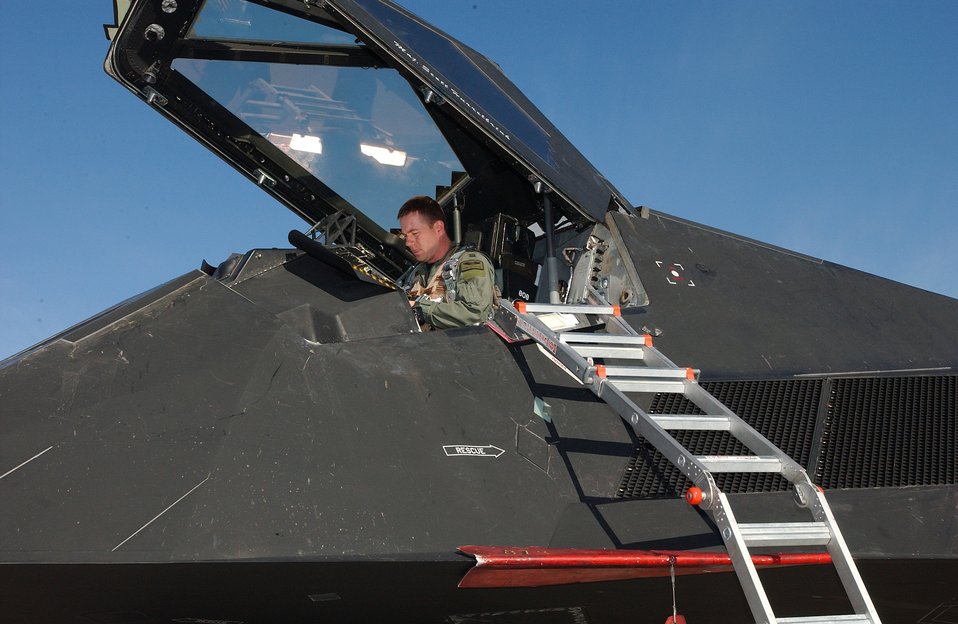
Nighthawk at Red Flag

NELLIS AIR FORCE BASE, Nev. (AFPN) -- Capt. Erik Jacobson reads a pre-flight checklists during Red Flag 06-1, here Jan. 21 to Feb. 18. Red Flag is an exercise that tests aircrews' warfighting skills. Flights involve more than 100 aircraft, including B-52 Stratofortresses and F-16 Fighting Falcons. The aircraft are flying missions day and night to the nearby Nevada Test and Training Range where they simulate an air war. Along with the Air Force, units from the Army, Navy, NATO and several allied countries are participating. Captain Jacobson is an F-117A Nighthawk pilot with the 49th Fighter Squadron at Holloman Air Force Base, N.M.